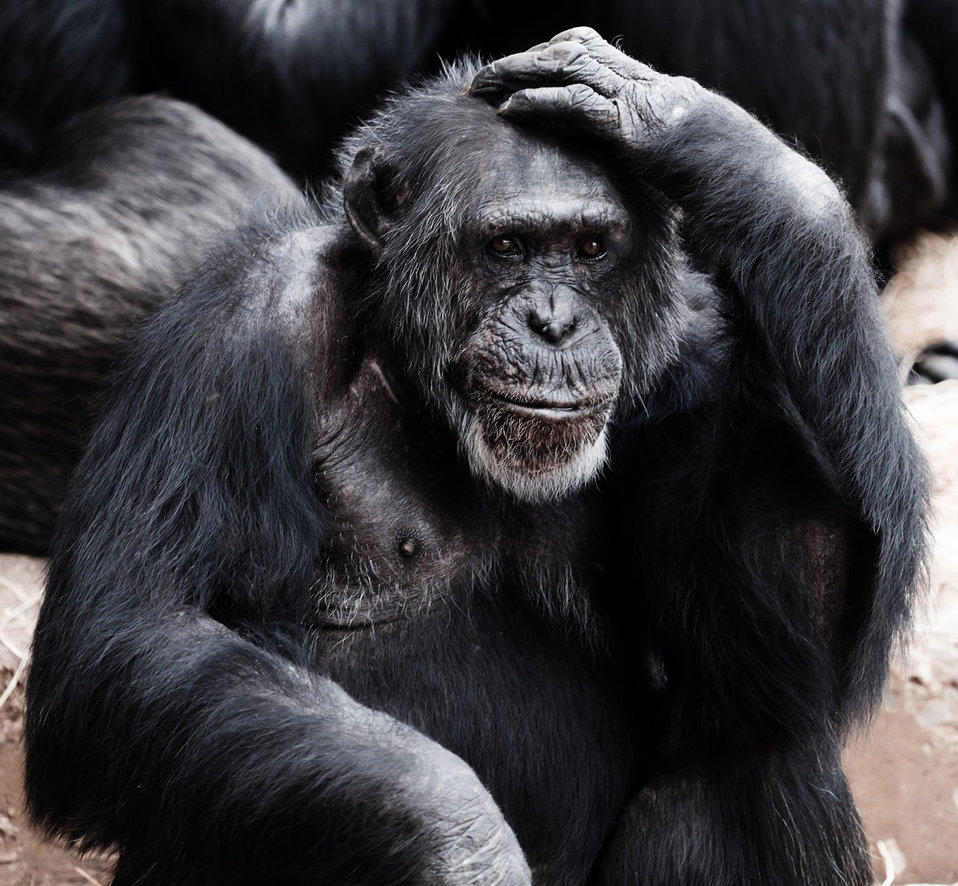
Old chimpanzee thinking.